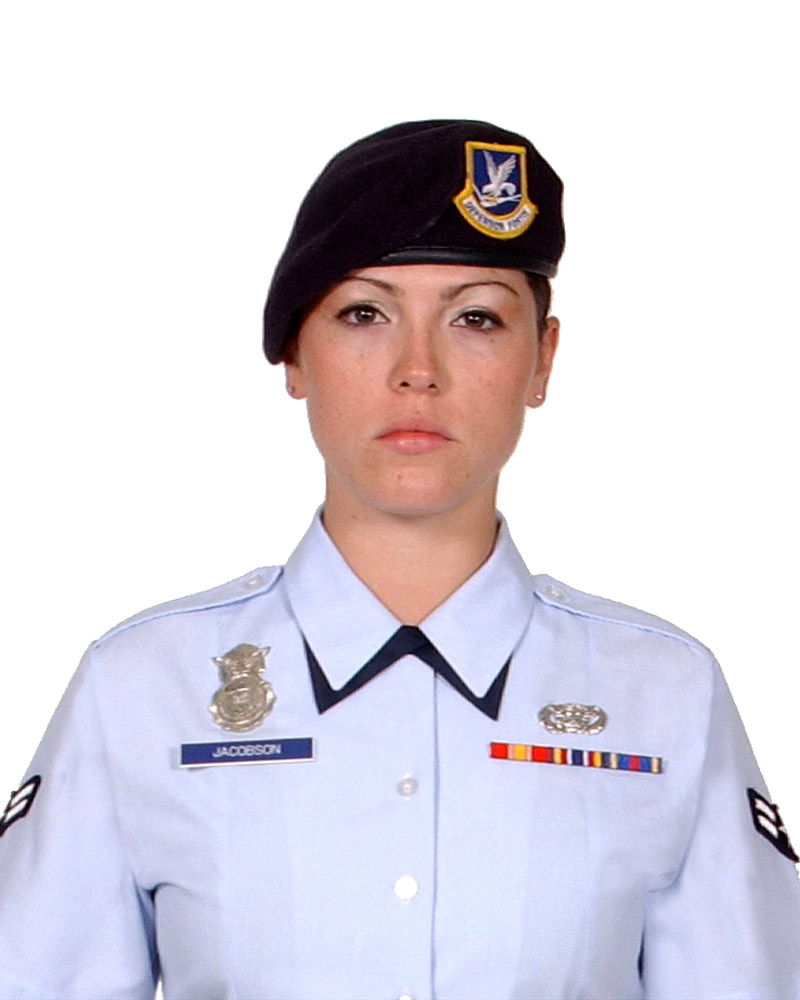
Female Airman killed in Iraq

Airman 1st Class Elizabeth Jacobson, 21, was providing convoy security Sept. 28 near Camp Bucca, Iraq, when the vehicle she was riding in was hit by an improvised explosive device.